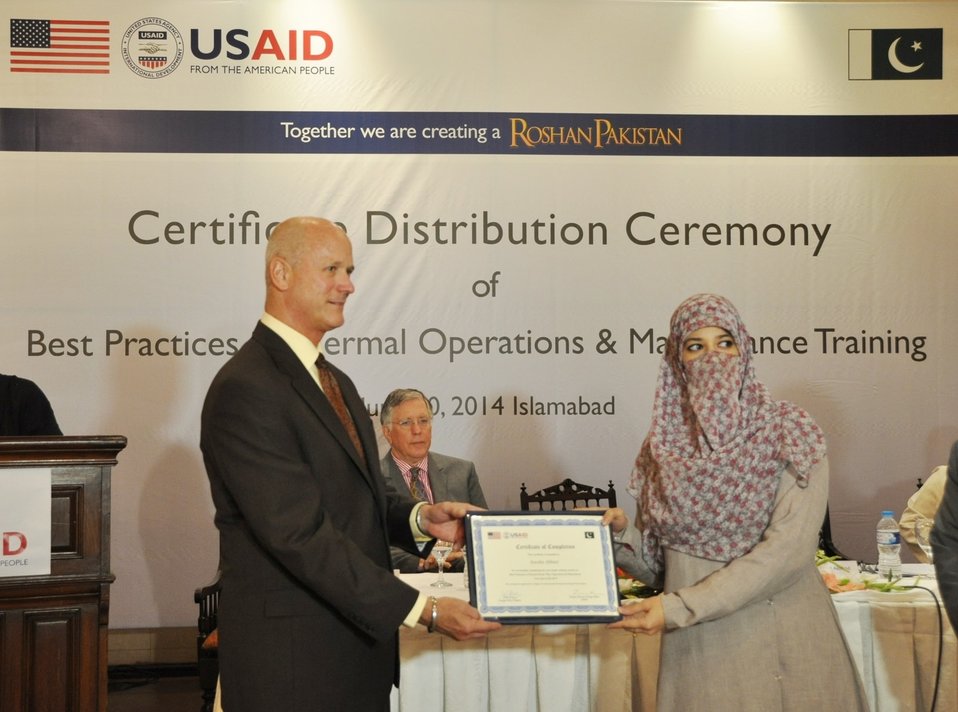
U.S. TRAINING IMPROVES POWER PLANT ENGINEERS’ EFFICIENCY

Deputy Director of USAID’s Energy Office Tim Moore presenting certificate to a female participant.